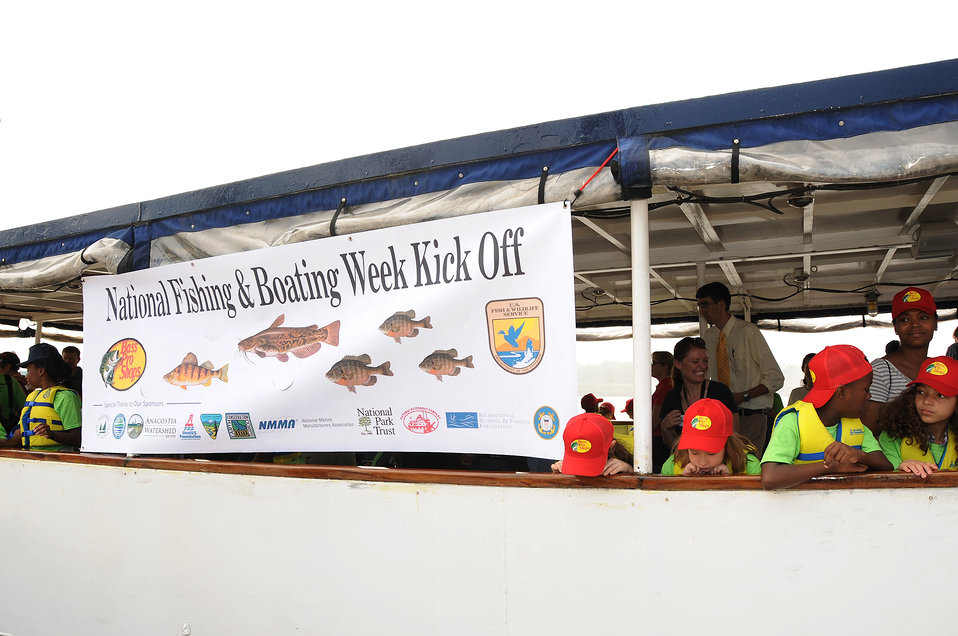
2013 National Fishing and Boating Week

Local students prepare to enjoy fishing at the annual kick-off of National Fishing and Boating Week on the Anacostia River in Washington D.C.